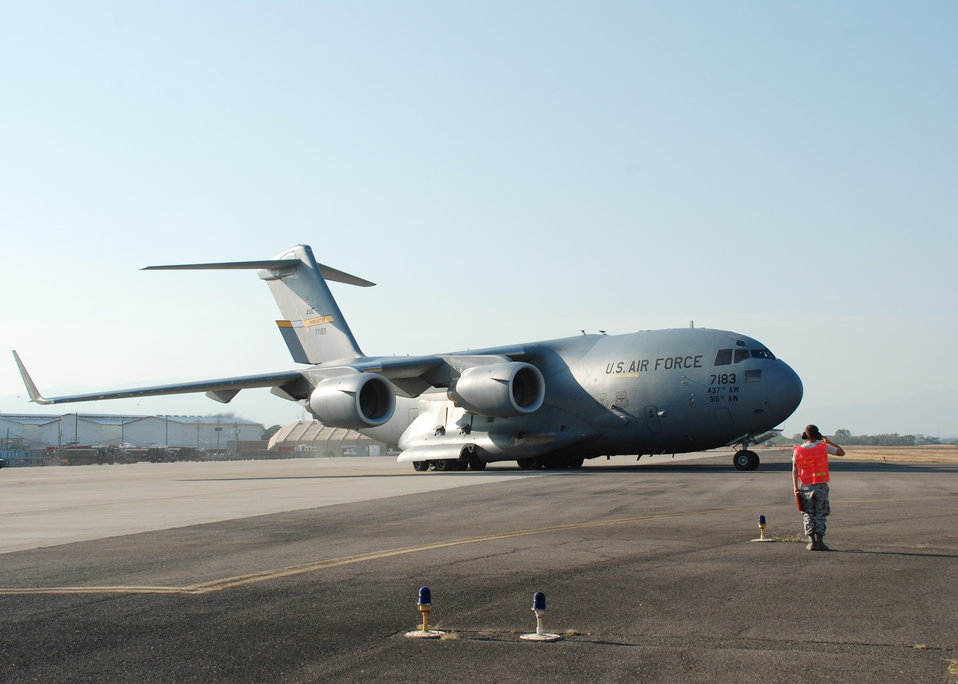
American servicemembers, helicopters deploy to Haiti

Senior Airman Kristopher Rainwater salutes a C-17 Globemaster III as it departs March 21, 2010, from Soto Cano Air Base, Honduras, with Joint Task Force-Bravo members deploying to Port au Prince, Haiti. Soto Cano AB officials sent 40 servicemembers and four UH-60 Blackhawks to support Joint Task Force-Haiti airlift operations as part of the disaster relief mission Operation Unified Response. Airman Rainwater is a 612th Logistics Readiness Squadron crew chief.